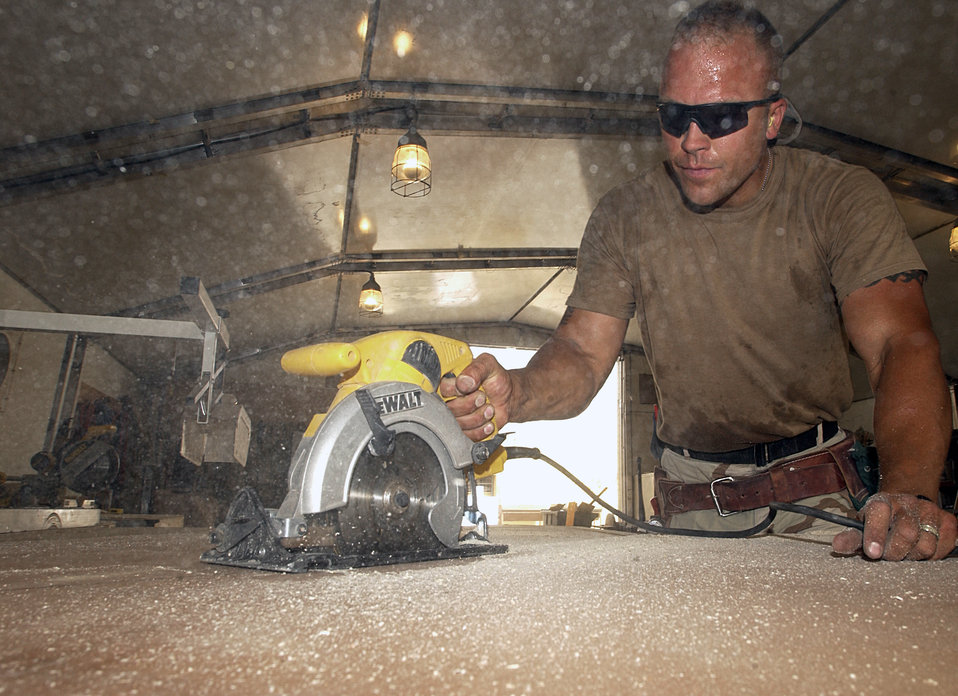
Cutting the wood

TALLIL AIR BASE, Iraq -- Staff Sgt. Jason Stone cuts plywood to help build one of three bus stops here May 22. Sergeant Stone is a member of the 407th Expeditionary Civil Engineer Squadron.